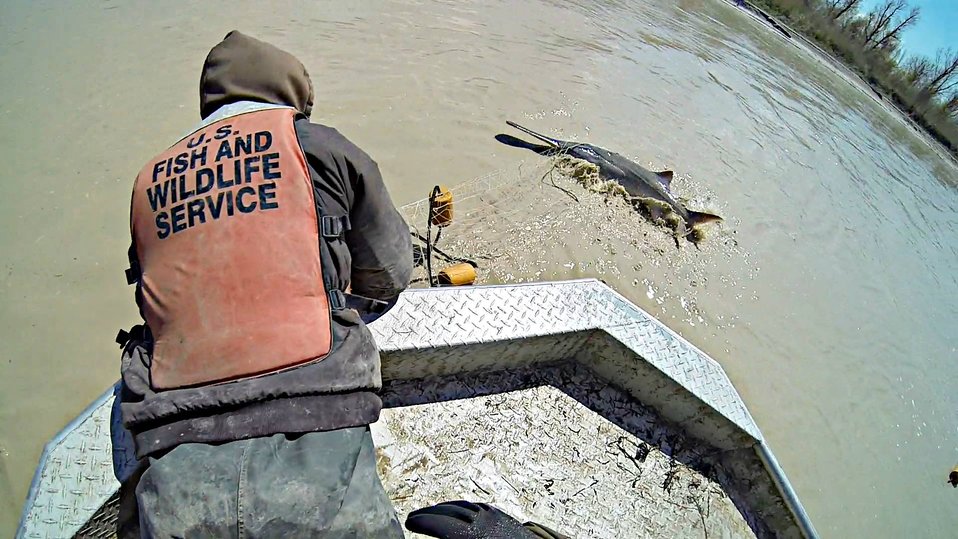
Paddlefish Action

Here's an action shot from our paddlefish harvest that took place about two weeks ago.

This spoonbill got airborne as our biologist tried to reel him in. He was immediately released since we were only looking for females at this point.